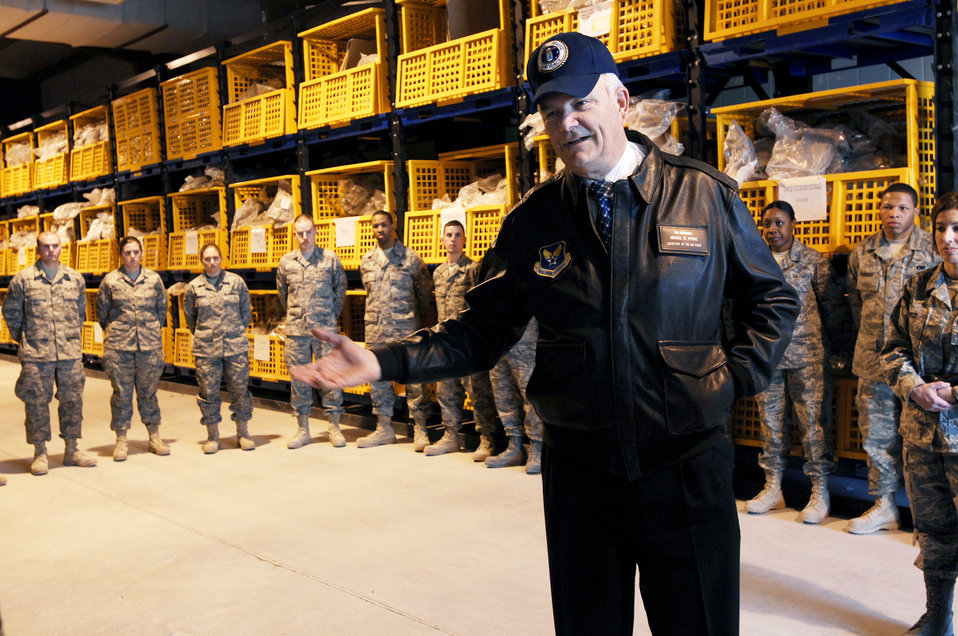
SECAF addresses Deployed Airmen

Secretary of the Air Force Michael Wynne, speaks to Airmen of the 386th Expeditionary Logistic Readiness Squadron during his visit Feb. 1. The SECAF spoke with more than 400 Airmen during his visit and gained greater insight on the 6,800 plus Airmen deployed throughout Southwest Asia in non-traditional Air Force functions.